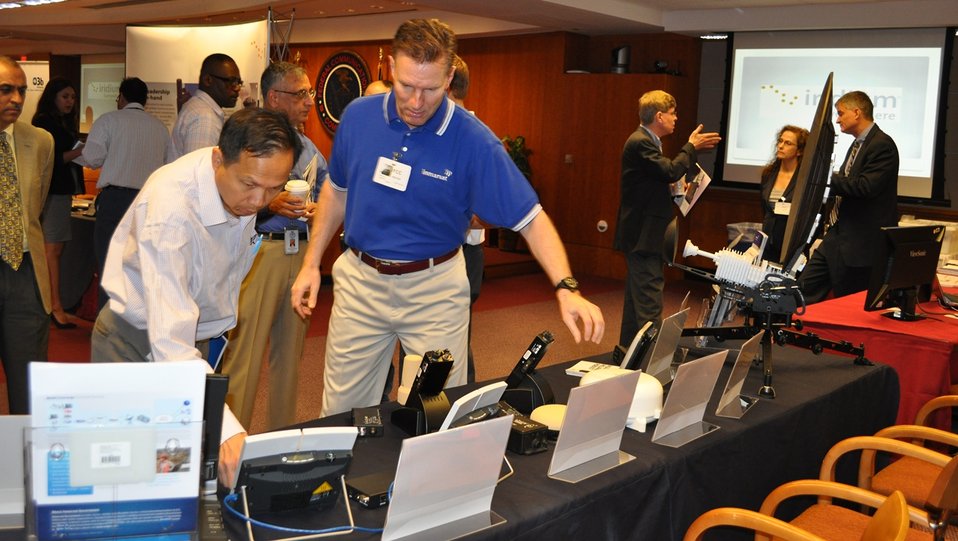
5.14.2014 Satellite Technology Demonstration

Satellite Technology Demonstration at FCC